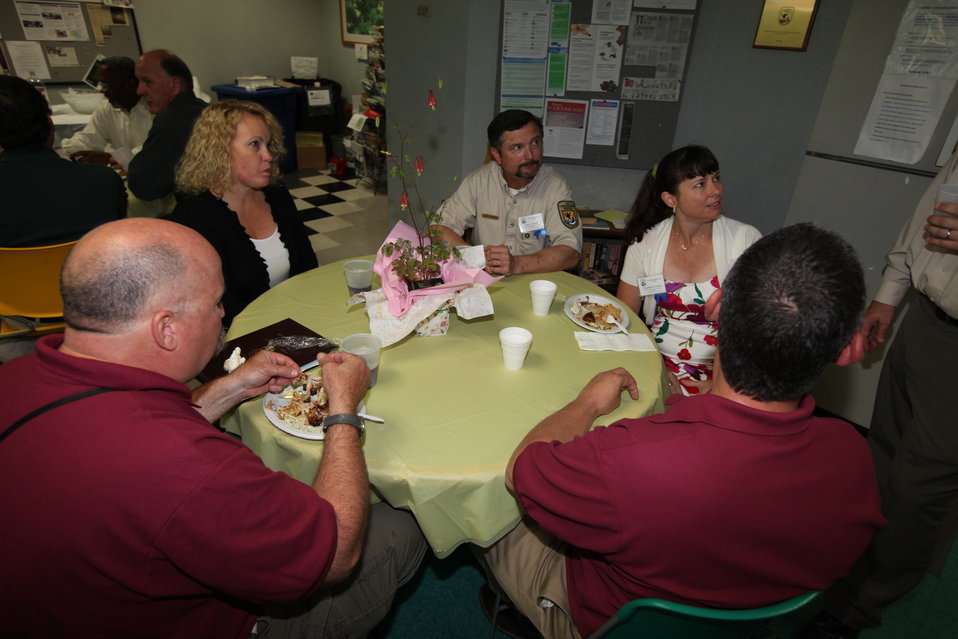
Northeast Region Employee Appreciation Awards

Luncheon